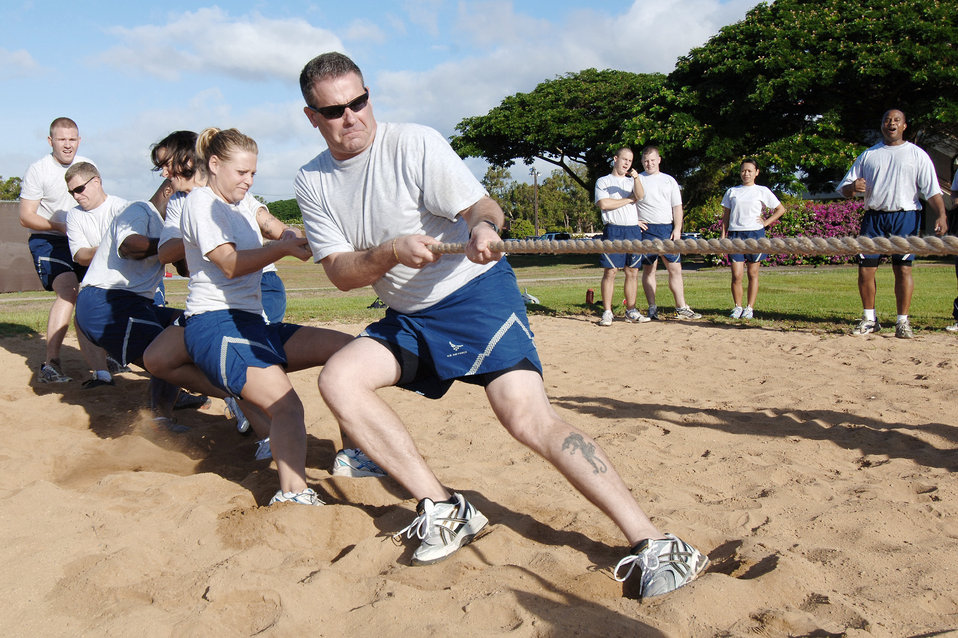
Joint team shows 'warrior spirit' during Jungle Day

Members of 13th Air Force compete in a tug-of-war battle during a Jungle Day sporting event held Nov.13, 2009, at Hickam Air Force Base, Hawaii. Jungle Day is a tradition that originated when the organization was assigned to Andersen AFB, Guam, and gives 13th Air Force members a chance to have fun and give back to the local community.